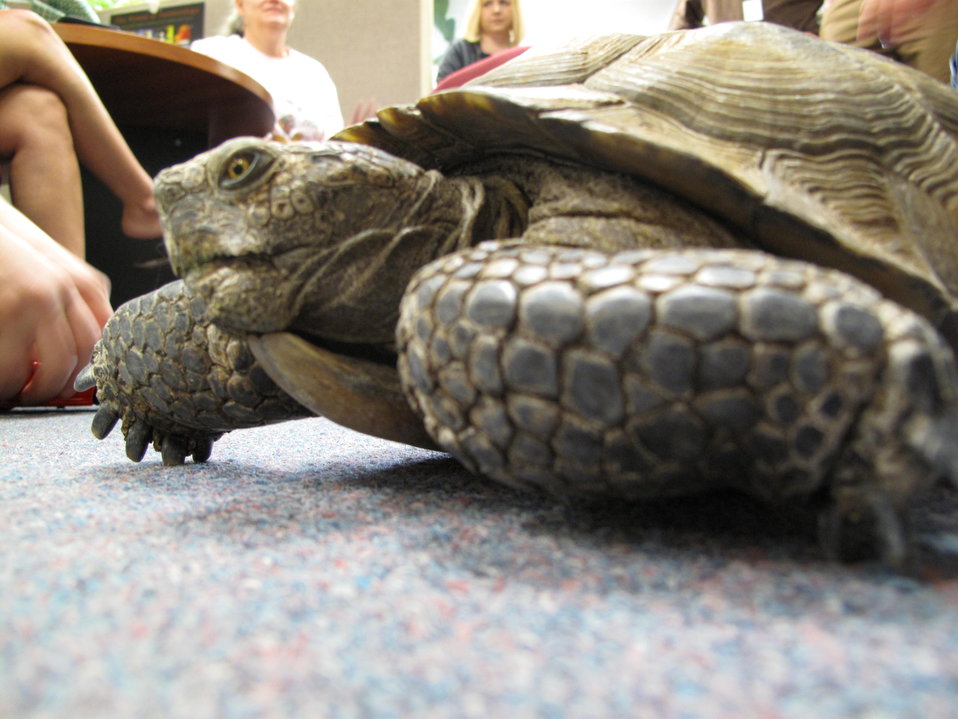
Crush the Desert Tortoise